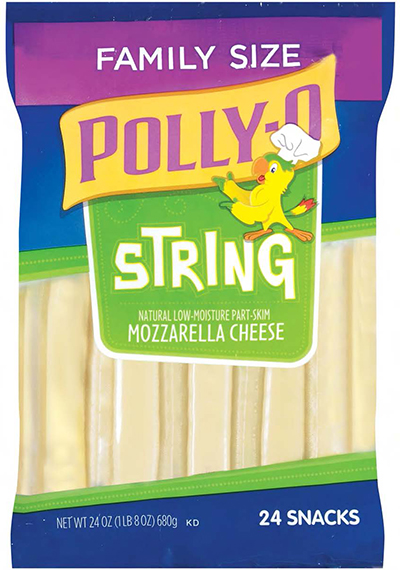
RECALLED – Cheese

October 25, 2013 – Product Recall – Kraft Voluntarily Recalls Some Varieties of Kraft And Polly-O String Cheese And String Cheese Twists Due to Premature Spoilage.